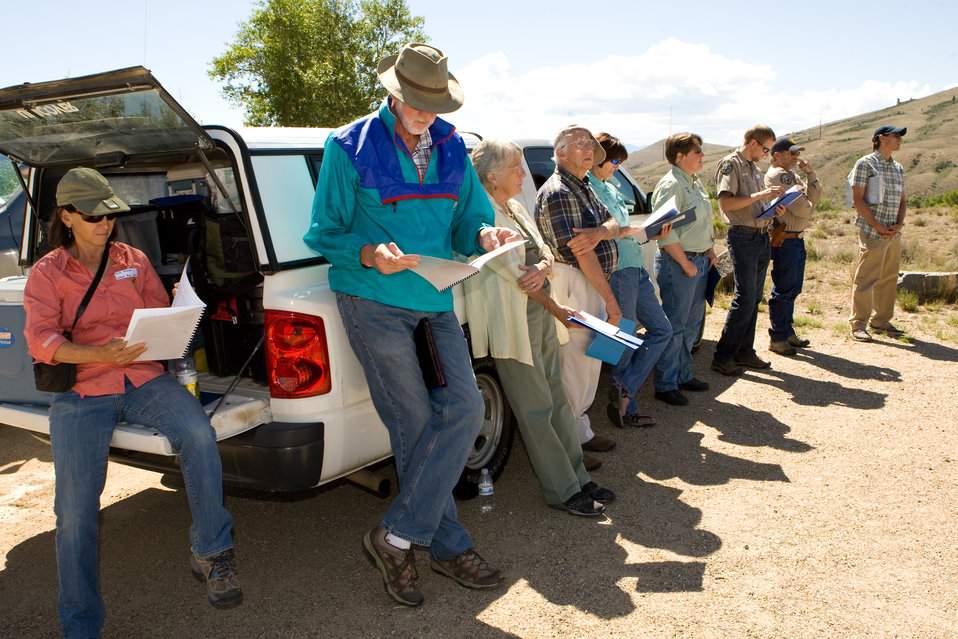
Colorado Rare Plant Conservation Initiative

The Colorado Rare Plant Conservation Initiative (RPCI) is a partnership of 23 statewide and regional agencies, private organizations, and academic institutions working to conserve 121 rare plants in Colorado. As part of these efforts the group developed the Colorado Rare Plant Conservation Strategy, developed Best Management Practices to reduce energy development impacts, addressed climate change, and developed focused strategies for the conservation of individual species at eight priority landscapes. The group has also worked to coordinate volunteer efforts for plant conservation across the state.